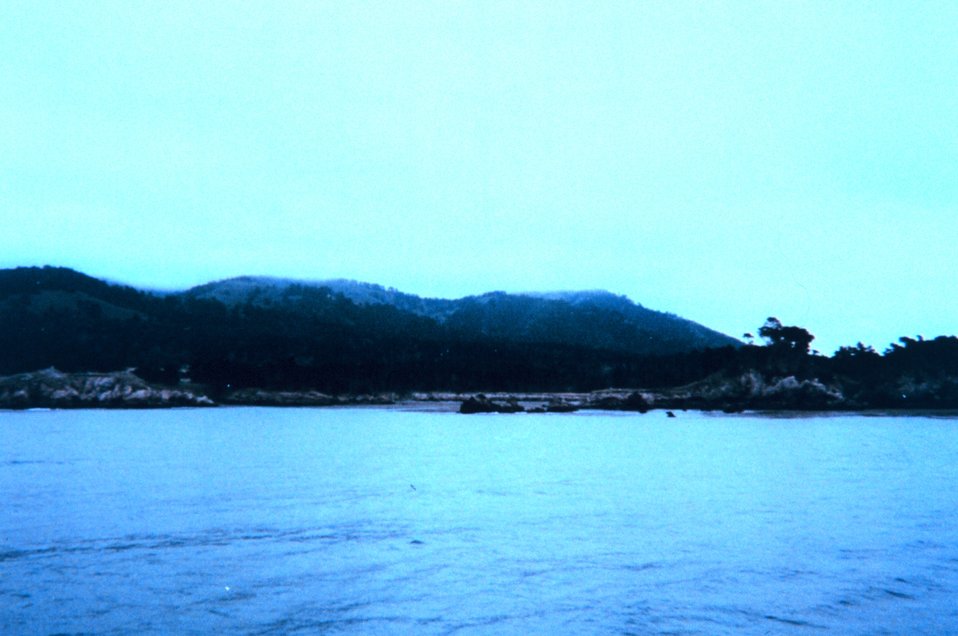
Portion of composite image of Point Lobos.